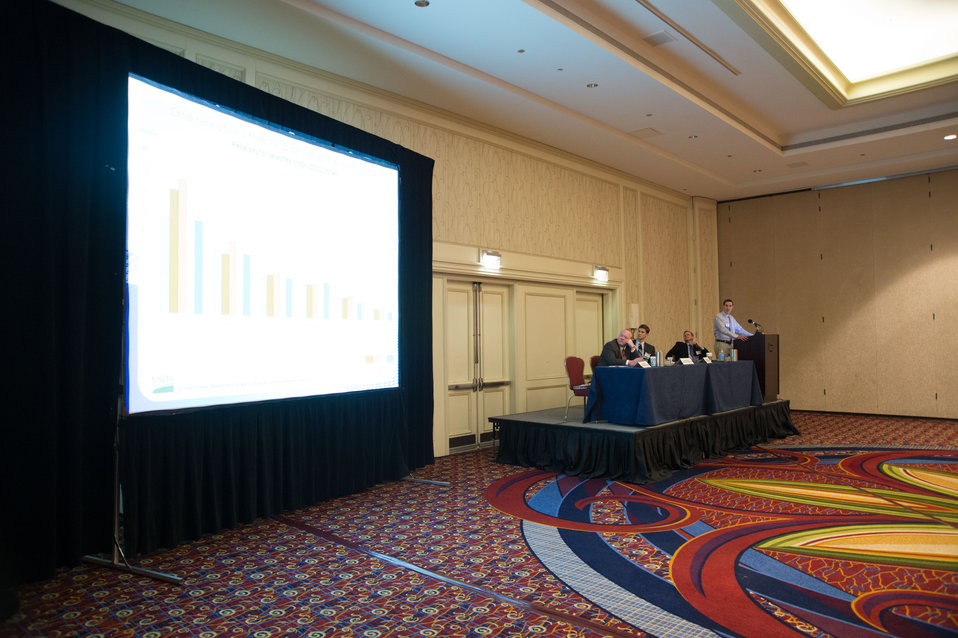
U.S. Department of Agriculture (USDA) Economic Research Service (ERS) Economist Kevin Patrick speaks at the plenary session, The Farm Income Outlook for 2014 at the 2014 Agricultural Outlook Forum on Thursday, Feb. 20, 2014 in Arlington, VA. The focused on general measures of the financial well-being of the U.S. farm economy, including farm household income. (L to R Purdue University West Lafayette, IN Center for Commercial Agriculture Brent Gloy, U.S. Department of Agriculture (USDA) Economic Research Service (ERS) Economist Jeremy Weber, Farm Bureau Senior Economist Todd Davis, and USDA ERS Economist Kevin Patrick). USDA’s annual Agricultural Outlook Forum brings together the agricultural community to discuss policy, trade, science, rural development, and the economic outlook for the coming year. The Forum also focuses on forestry, health and nutrition issues, and the changing dynamics and face of rural America.